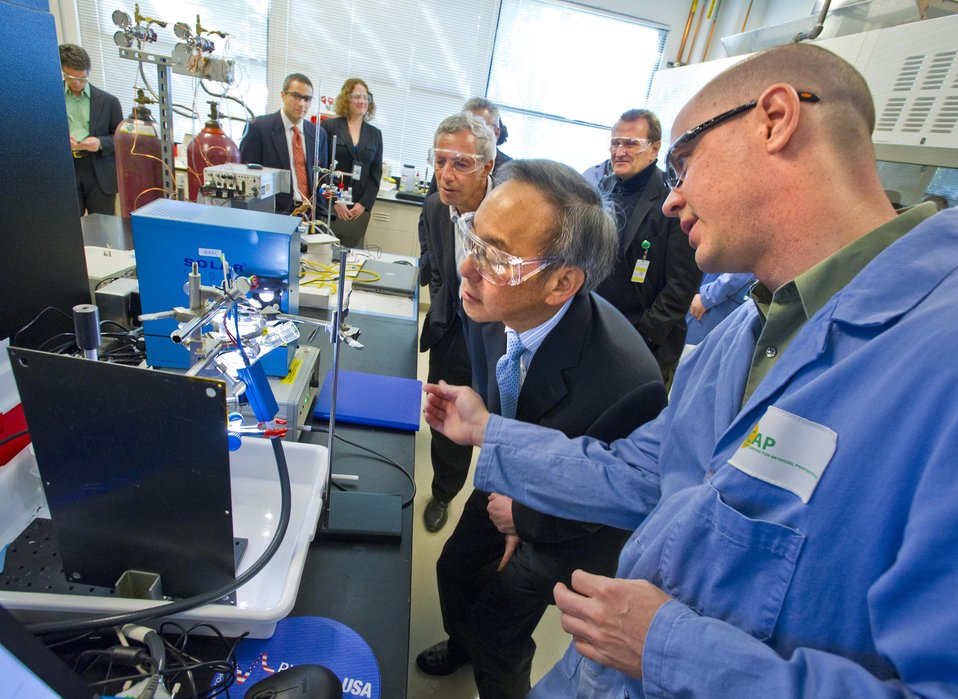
Energy Secretary Steven Chu visits the Joint Center for Artificial Photosynthesis (JCAP)-North, a DOE energy innovation hub aimed at developing the technology to commercially generate fuels directly from sunlight.

Secretary Chu saw demonstrations of a fast prototyping 3-D printer and a photochemistry water-splitting experiment. JCAP is operated as a partnership between the California Institute of Technology and Berkeley Laboratory.